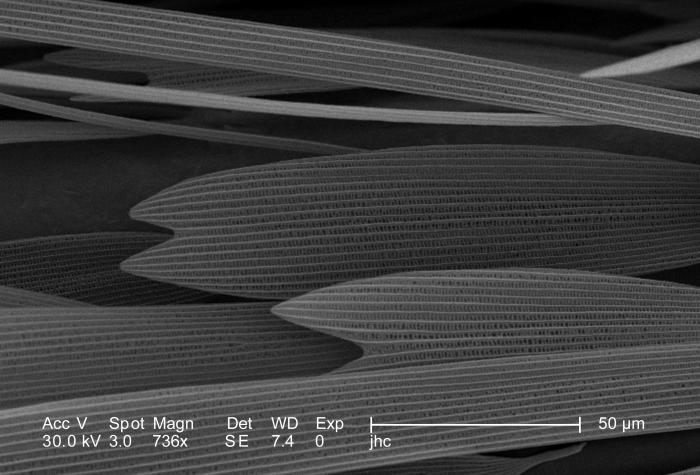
In this scanning electron micrographic (SEM) view of an unidentified white moth's exoskeletal surface, under a relatively low magnification of 736X, some of the ultrastructural details found in the construct of its scales was revealed. This moth, discovered deceased in the Decatur, Georgia suburbs, was a member of the Phylum Arthropoda, Order Lepidoptera. At this level of magnification the diaphanous structure of these scales could be appreciated, bringing to life the incredible microscopic beauty, which goes unseen, but is abundant all around us. For another, highly magnified view revealing the proximal end of a single scale, as it inserted into the exoskeletal surface, see PHIL 9841.